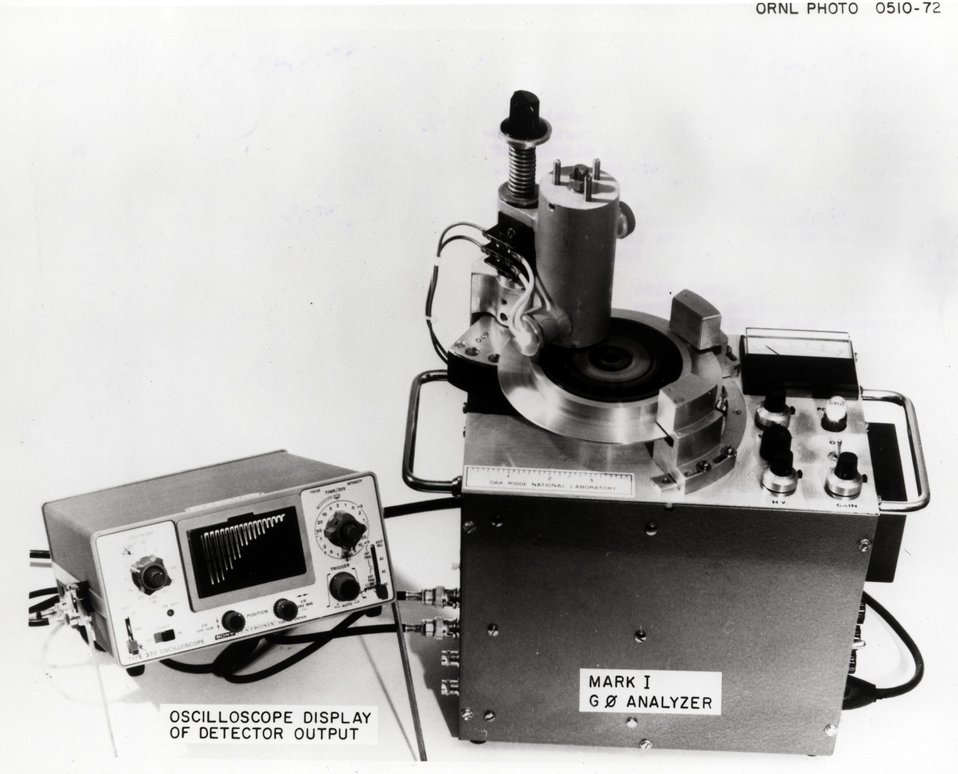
Oak Ridge National Laboratory has developed a complete gravity-zero miniature fast photo metric analyzer with oscilloscope display of detector output, cuvets, lamp, and controls. c. 1973